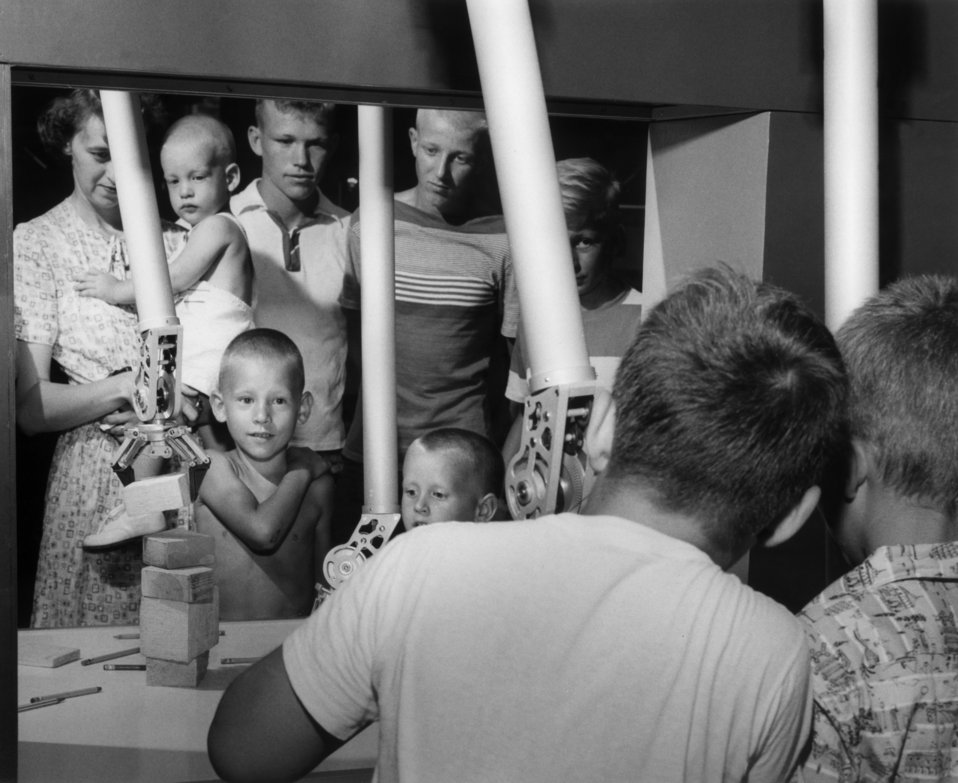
Exhibit at Oak Ridge High School in Oak Ridge

56-833 DOE photo by Ed Westcott

Exhibit at Oak Ridge High School in Oak Ridge Tennessee 8-5-1956